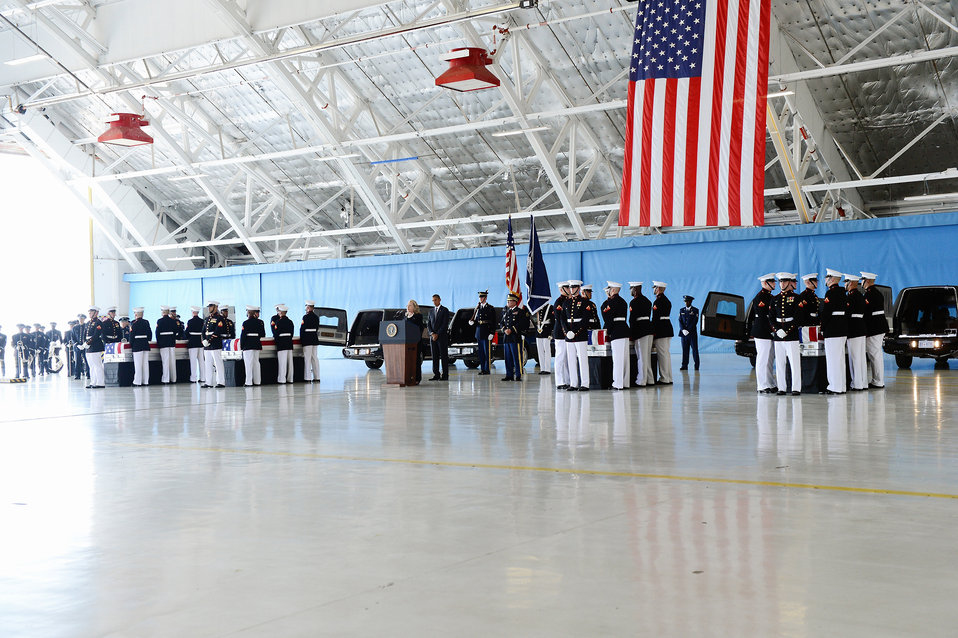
President Obama and Secretary Clinton at the Transfer of Remains Ceremony to Honor Those Lost in Attacks in Libya

President Barack Obama and U.S. Secretary of State Hillary Clinton honor the Benghazi victims at the Transfer of Remains Ceremony held at Andrews Air Force Base, Joint Base Andrews, Maryland, September 14, 2012. An attack on the U.S. diplomatic mission in Benghazi, Libya claimed the lives of Ambassador J. Christopher Stevens, Information Management Officer Sean Smith, and security personnel Tyrone S. Woods and Glen A. Doherty on September 11, 2012.